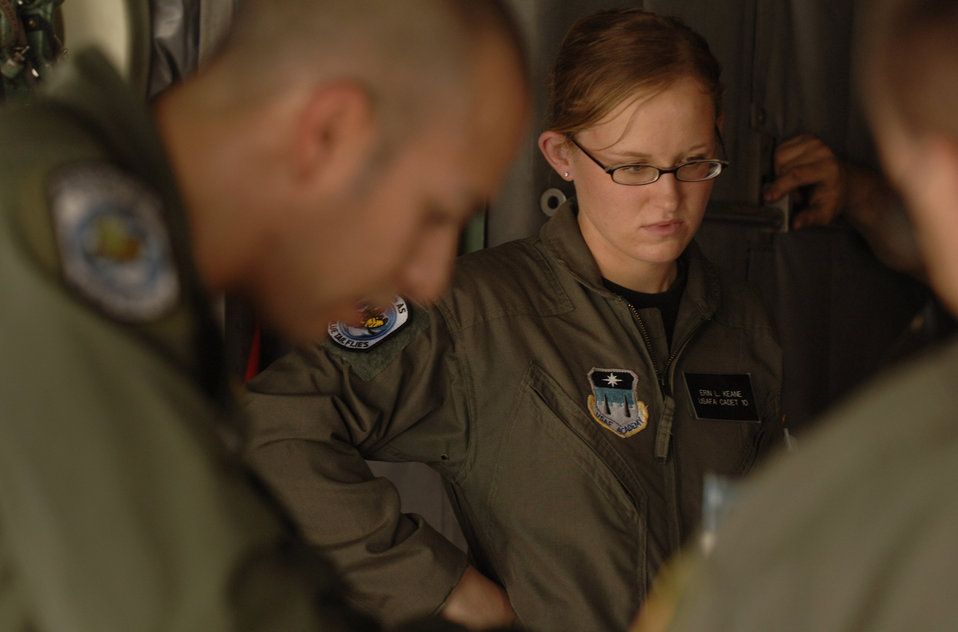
Operation Air Force puts cadets in the air

Before an airdrop mission over eastern Germany, Air Force Academy Cadet 2nd Class Erin Keane observes the preflight duties of C-130 Hercules loadmasters, Staff Sgt. Dan Insurriaga and Senior Airman Matthew Merkely. Cadet Keane was participating in a hands-on, job shadow program called Operation Air Force.